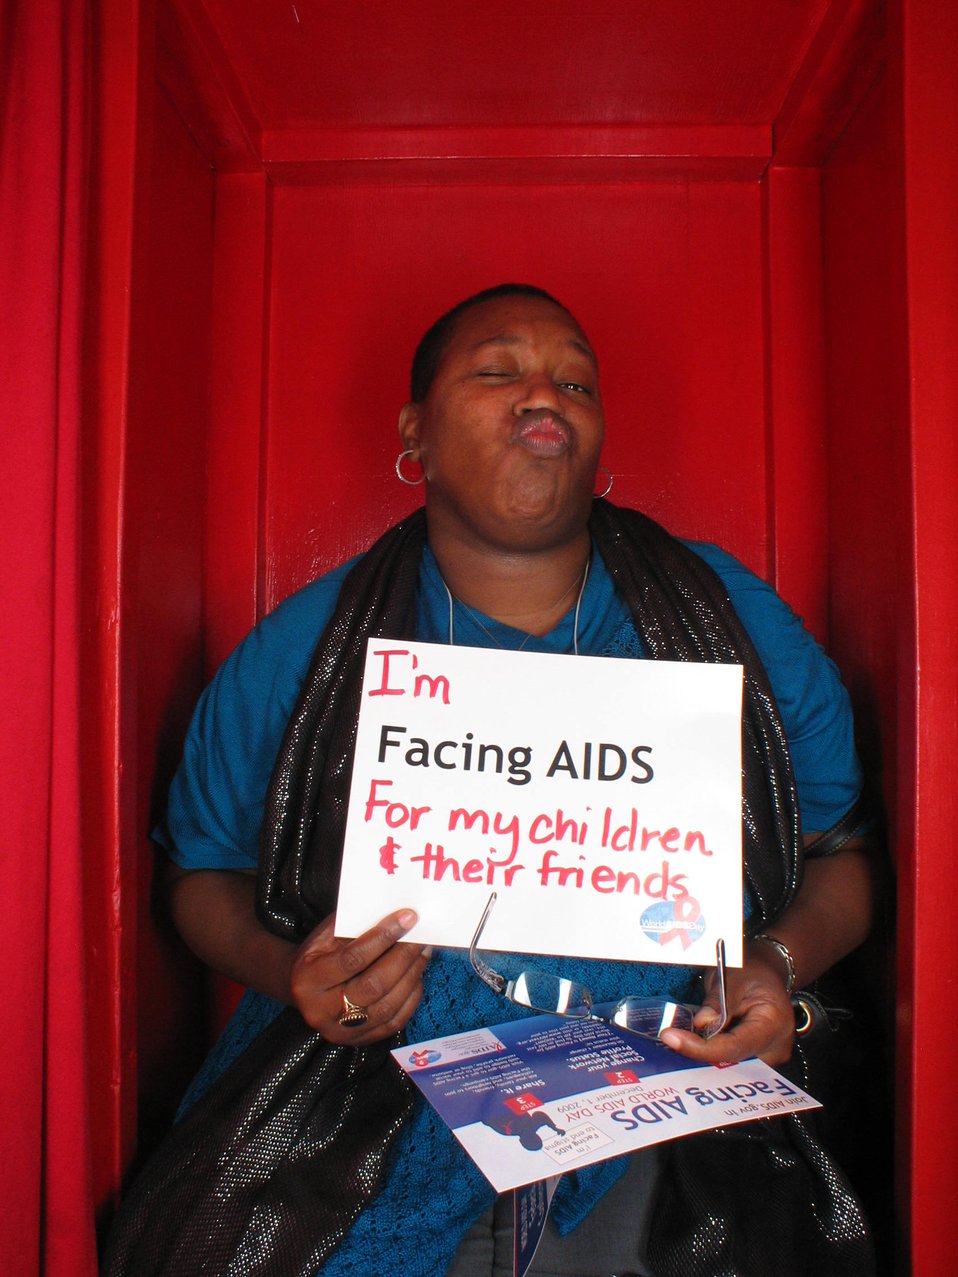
I'm Facing AIDS for my children and their friends